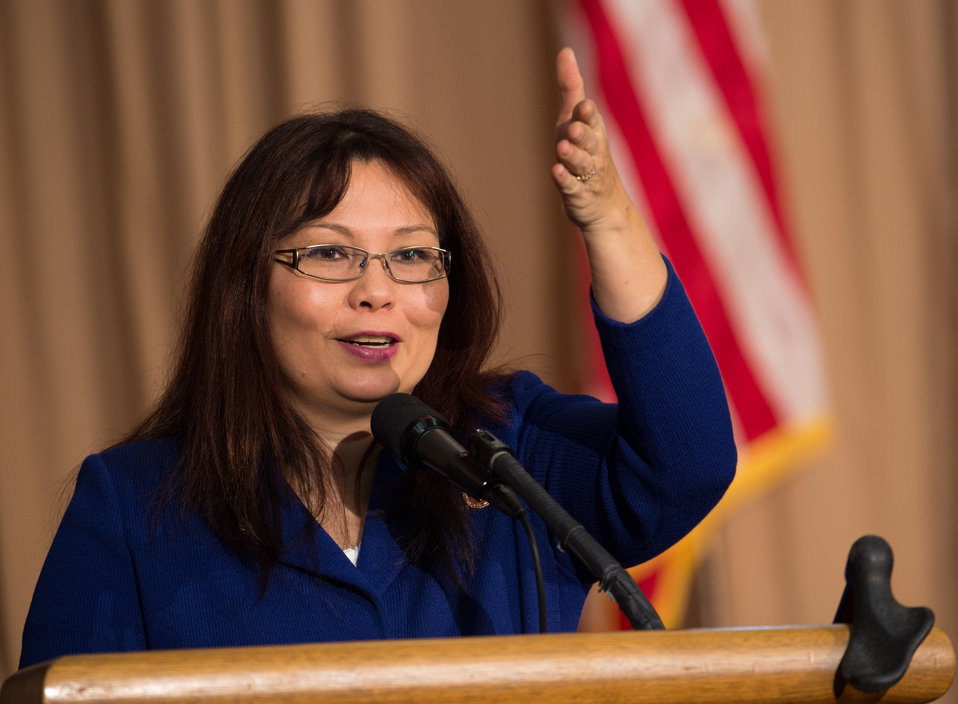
U.S. Congresswoman Tammy Duckworth (D-Ill.) the keynote speaker at the 2013 U.S. Department of Agriculture (USDA), Veterans’ Day Observance, whose theme is “VALOR, COURAGE, SACRIFICE – HONORING ALL WHO SERVED,” in Washington, DC, on Wednesday, November 20, 2013. Congresswoman Tammy Duckworth is an Iraq War Veteran and former Assistant Secretary of Veterans Affairs. In 2004, Duckworth was deployed to Iraq as a Blackhawk helicopter pilot for the Illinois Army National Guard. She was one of the first Army women to fly combat missions during Operation Iraqi Freedom. Her Blackhawk helicopter was hit by an RPG (Rocket Propelled Grenade) on November 12, 2004 resulting in Duckworth losing her legs and partial use of her right arm in the explosion. She was awarded a Purple Heart for her combat injuries. Duckworth declined a military medical retirement and continues to serve as a Lieutenant Colonel in the Illinois Army National Guard.